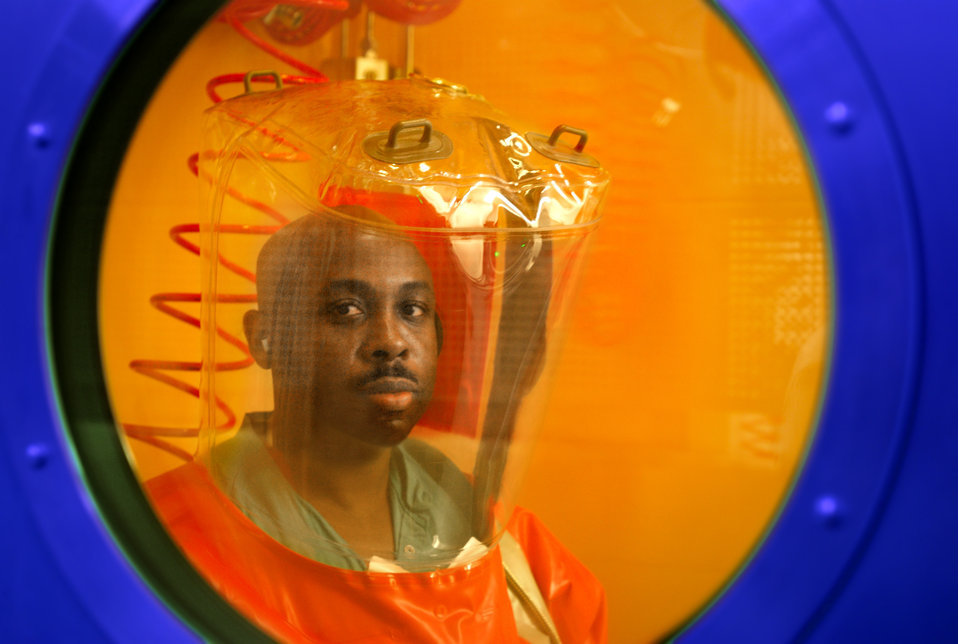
In this 2007 image, Center for Disease Control (CDC) microbiologist, and Special Pathogens Branch staff member, was peering out through an air-tight portal from inside the organization's Biosafety Level 4 (BSL-4) laboratory decontamination shower. The shower leads into the changing room, were laboratorians could disrobe, safely removing their air-tight suits.